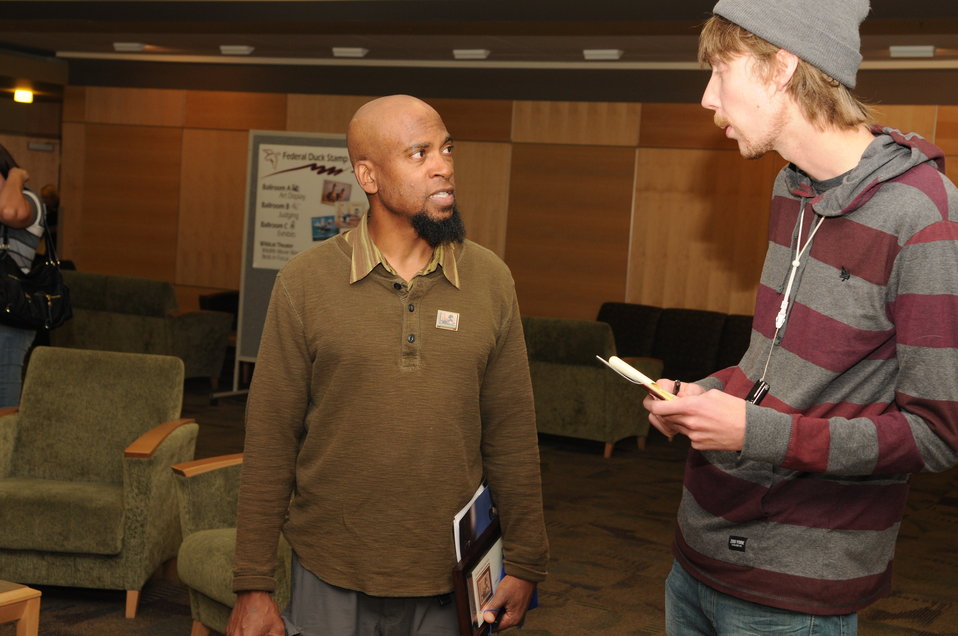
Weber State Reporting

The U.S. Fish & Wildlife Service sponsored the 2012 Federal Duck Stamp Art Contest September 28 and 29 in Ogden, Utah, at Weber State University. A panel of five judges was responsible for choosing the art work used to design the 2013-2014 Migratory Bird Hunting and Conservation Stamp.